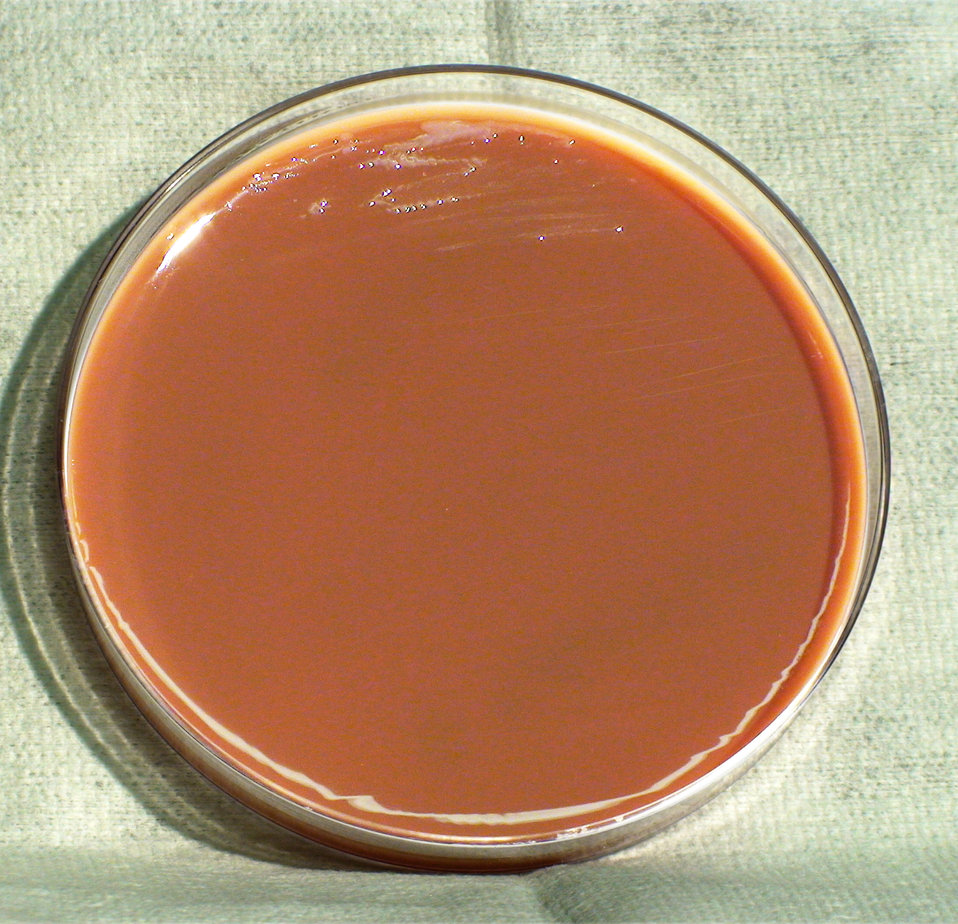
This photograph depicts the colonial morphology displayed by Gram-negative Francisella tularensis bacteria, which was grown on a medium of chocolate agar, for a 24 hour time period, at a temperature of 37�C. See PHIL 12438, for a closer view of these bacterial colonies. Take a look at PHIL 12439 depicting the appearance of F. tularensis colonies grown on the same medium, and at the same temperature, but for twice the time (48hr). Also see both PHIL 12440 and 12441, for the appearance of bacterial colonies, again, grown on the same medium, and at the same temperature, but for three times the time period (72hr).